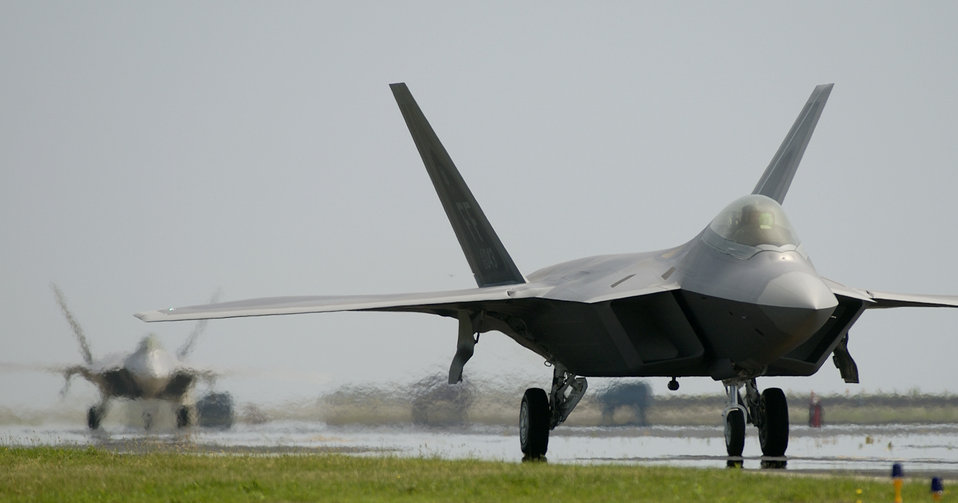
AF Budget

LANGLEY AIR FORCE BASE, VA. (AFPN) -- Two F-22A Raptors taxi down the runway. This year's $1.3 billion military construction request, as part of the president's fiscal year 2007 budget plan, is the largest in the last 15 years and includes projects for new mission beddowns for the F-22A Raptor.